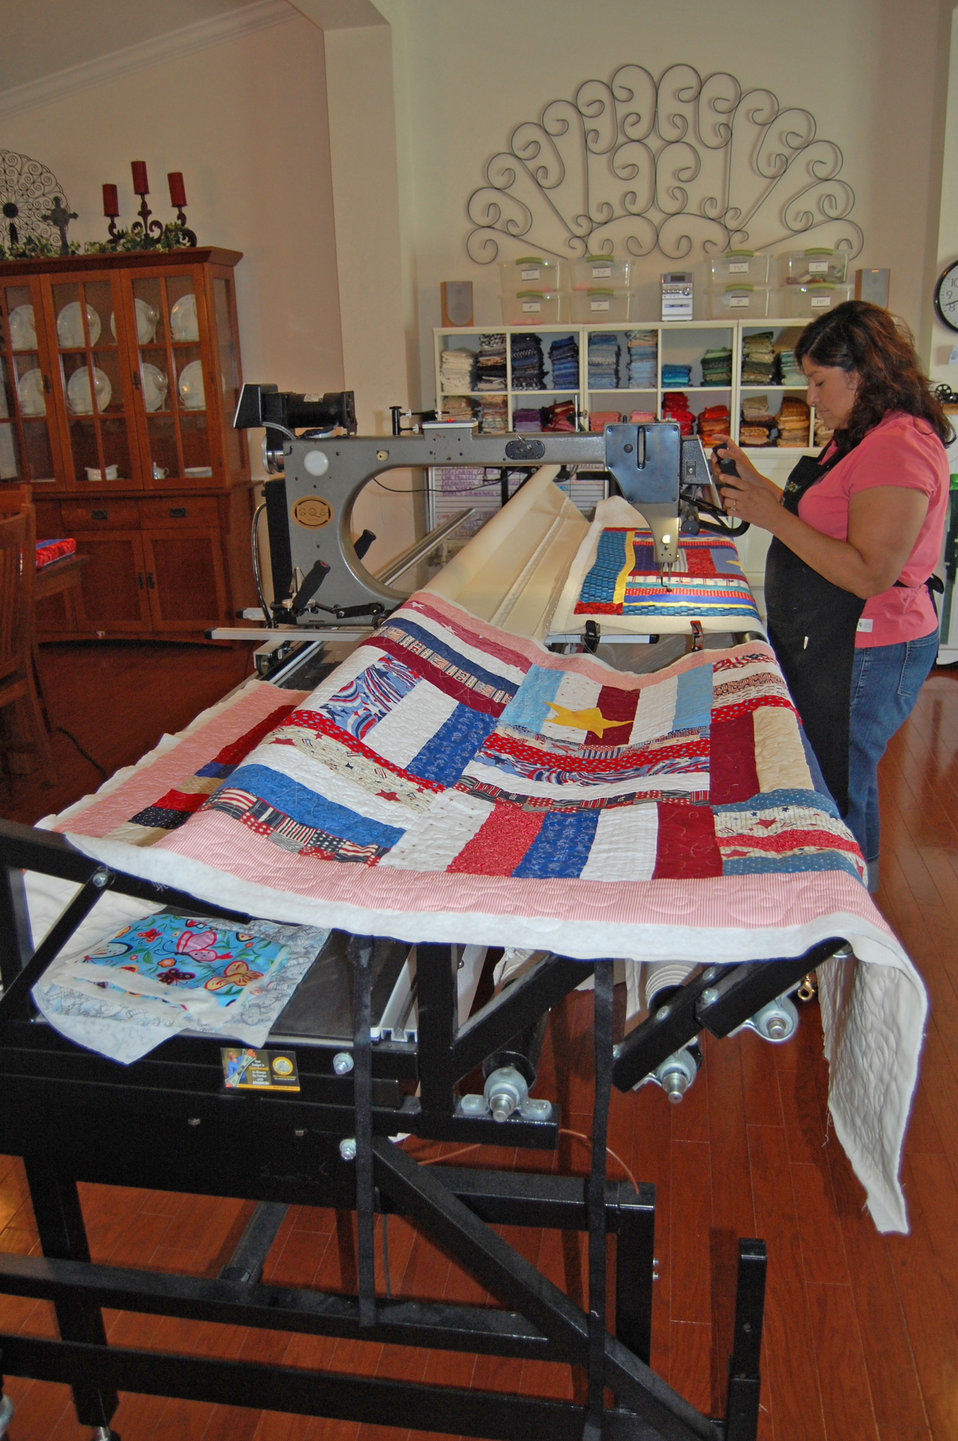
Quilts of Valor a comfort for complex wartime emotions

Irene Hafer works on a Quilts of Valor quilt on her longarm machine June 24 in her home studio in Dover, Del.